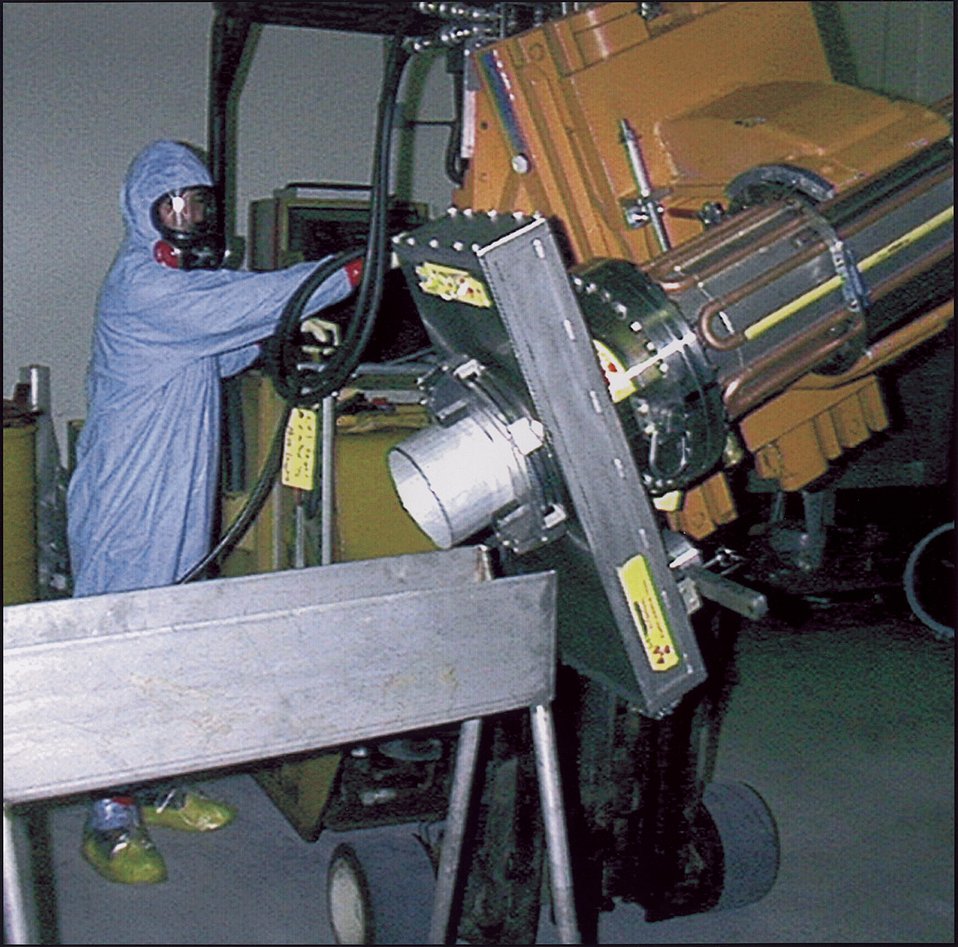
OPERATOR REMOVES ENRICHED PRODUCT FROM THE SEPARATOR WITHDRAWAL CANISTER.

A DESIRED ISOTOPE OF A CHEMICAL ELEMENT MUST BE SEPARATED FROM THE REMAINING ISOTOPES, FOR USES RANGING FROM MEDICINE TO ENERGY TO WEAPONS APPLICATIONS. LLNL DEVELOPED AN EFFICIENT TECHNIQUE CALLED ATOMIC VAPOR LASER ISOTOPE SEPARATION (AVLIS), BASED ON THE FACT THAT DIFFERENT ISOTOPES OF THE SAME ELEMENT, WHILE ELECTRONICALLY IDENTICAL, HAVE DIFFERENT ELECTRONIC ENERGIES AND THEREFORE ABSORB DIFFERENT COLORS OF LASER LIGHT.